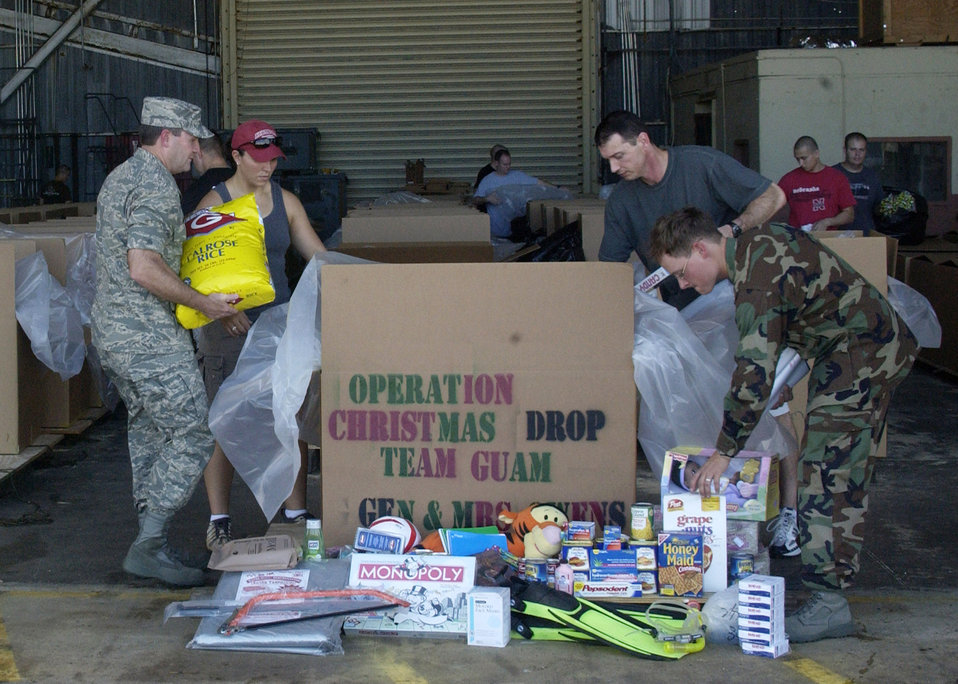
Operation Christmas Drop box build-up complete in Guam

Brig. Gen. Douglas H. Owens (left) and members of Andersen Air Force Base, Guam, pack boxes for Operation Christmas Drop 2007 Dec. 8. This will be the 55th year of Operation Christmas Drop. Andersen AFB members are scheduled to make 74 drops over 71 islands, culminating in the largest Operation Christmas Drop in the history of the base's effort to spread holiday cheer to people living in islands close to Guam. General Owens is the 36th Wing commander.